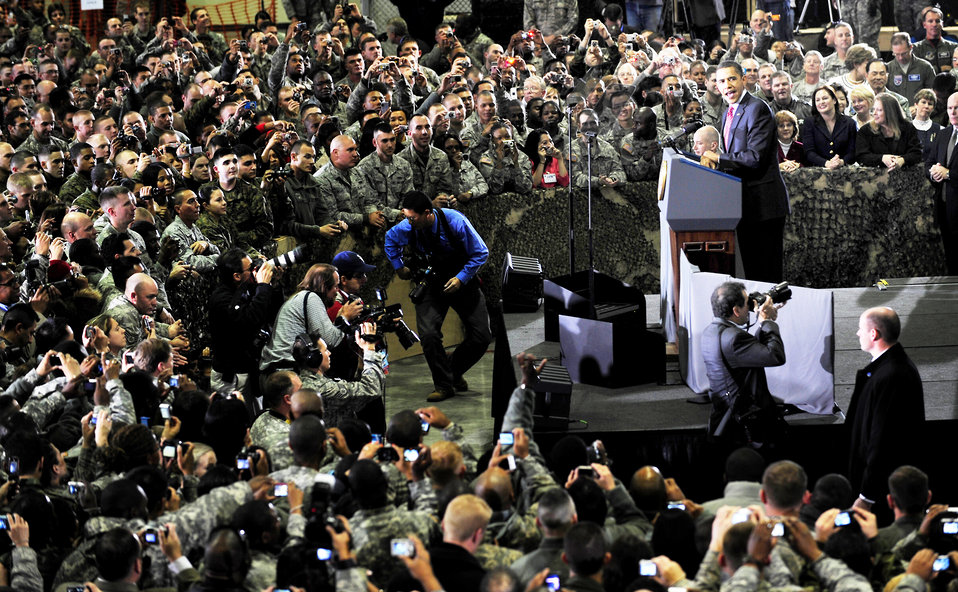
President Obama holds troop rally at Osan

President Barack Obama addresses more than 1,500 U.S. servicemembers Nov. 18, 2009, at Osan Air Base, South Korea. This is President Obama's first visit to Korea since taking office in January.